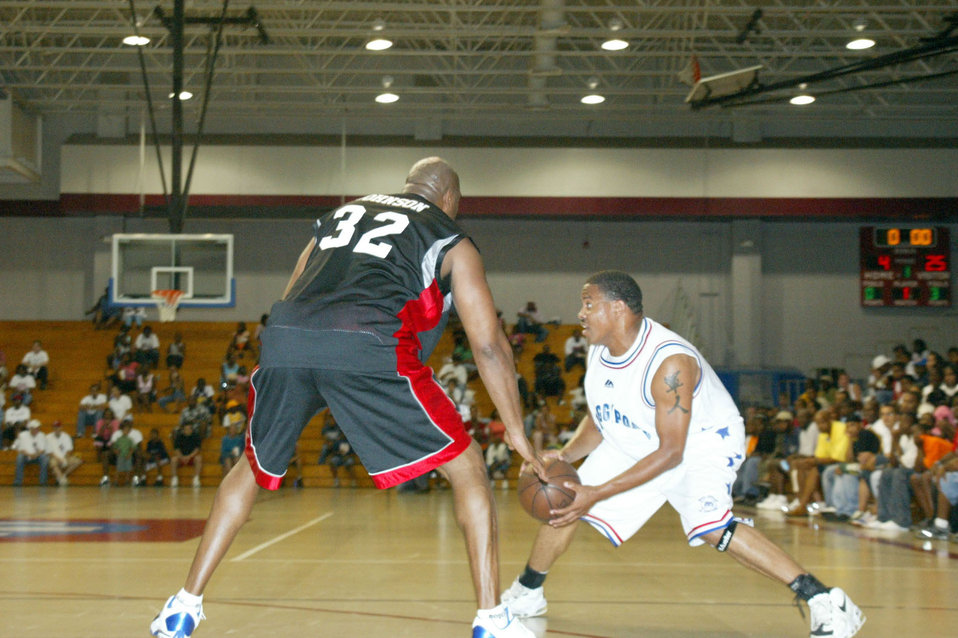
'Magic' comes to North Carolina

FORT BRAGG, N.C. -- Staff Sgt. Greg Streeter tries to play around Earvin